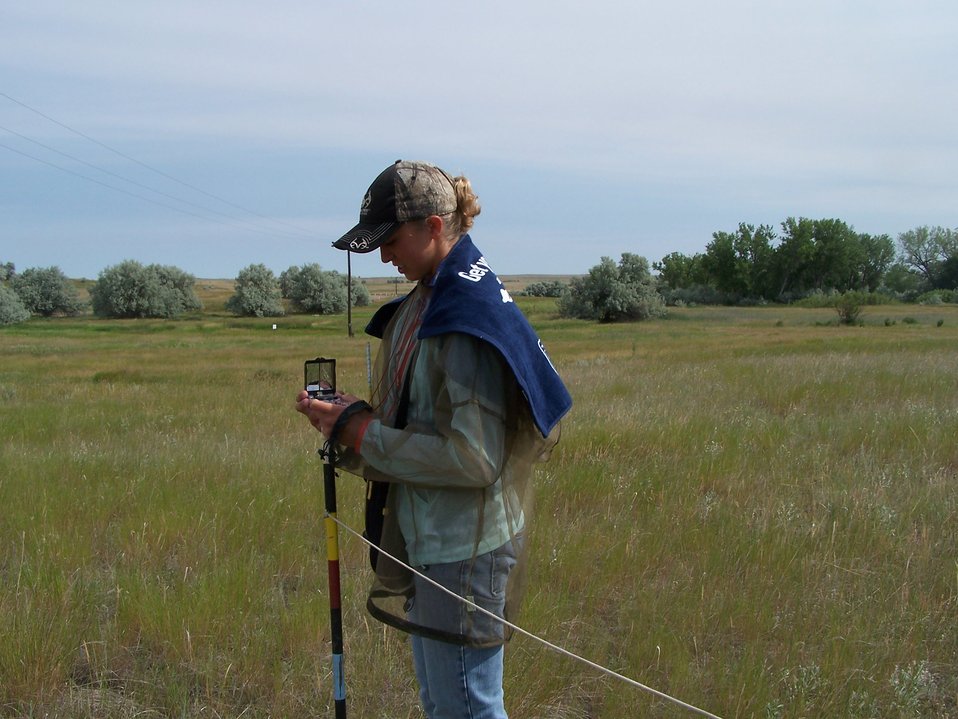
Get Your Goose On!

Bowdoin NWR Summer Range Technician doing vegetation transects with the GYGO towel